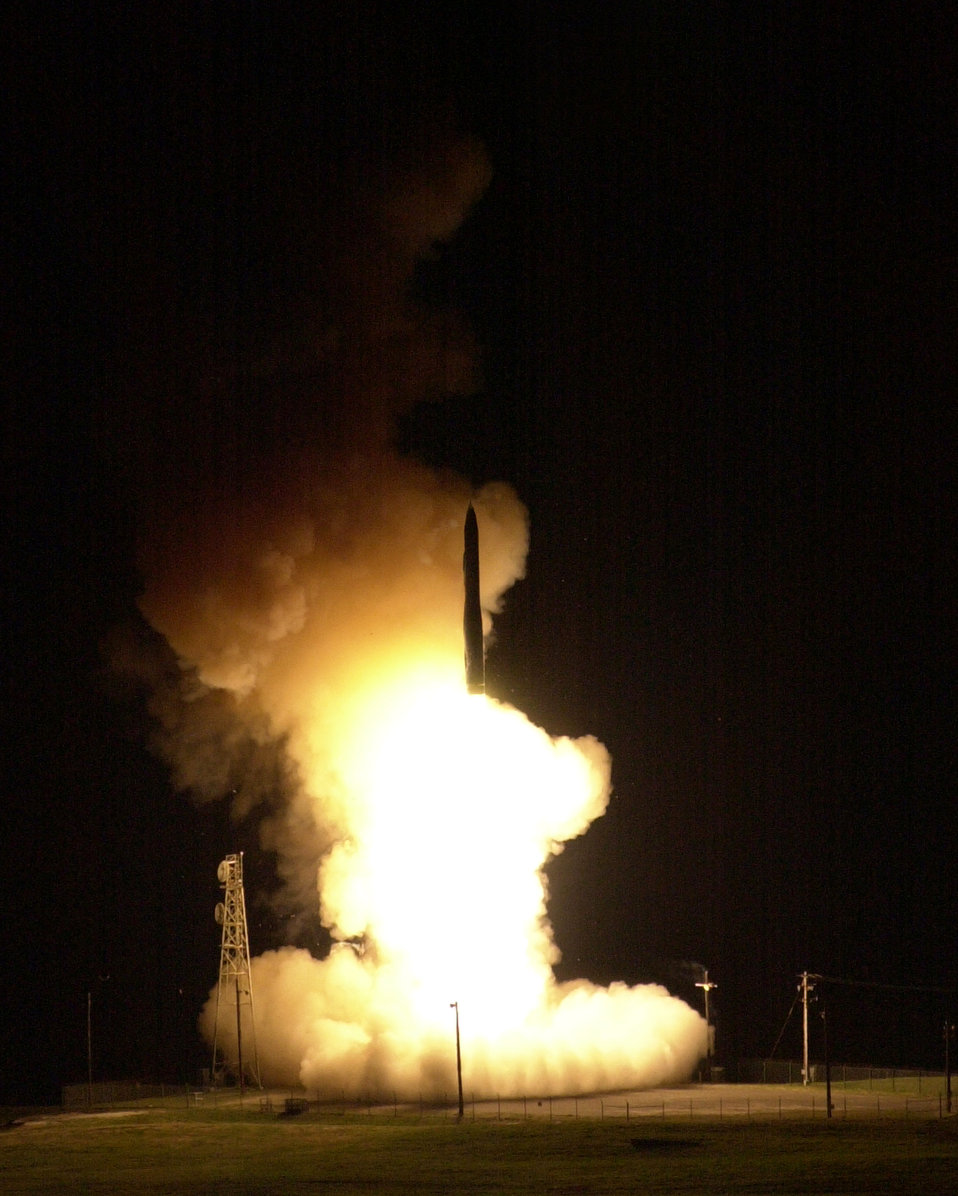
Minuteman III launch

VANDENBERG AIR FORCE BASE, Calif. (AFPN) -- An unarmed Minuteman III intercontinental ballistic missile is launched from Launch Facility-10 at 12:01 a.m. today.